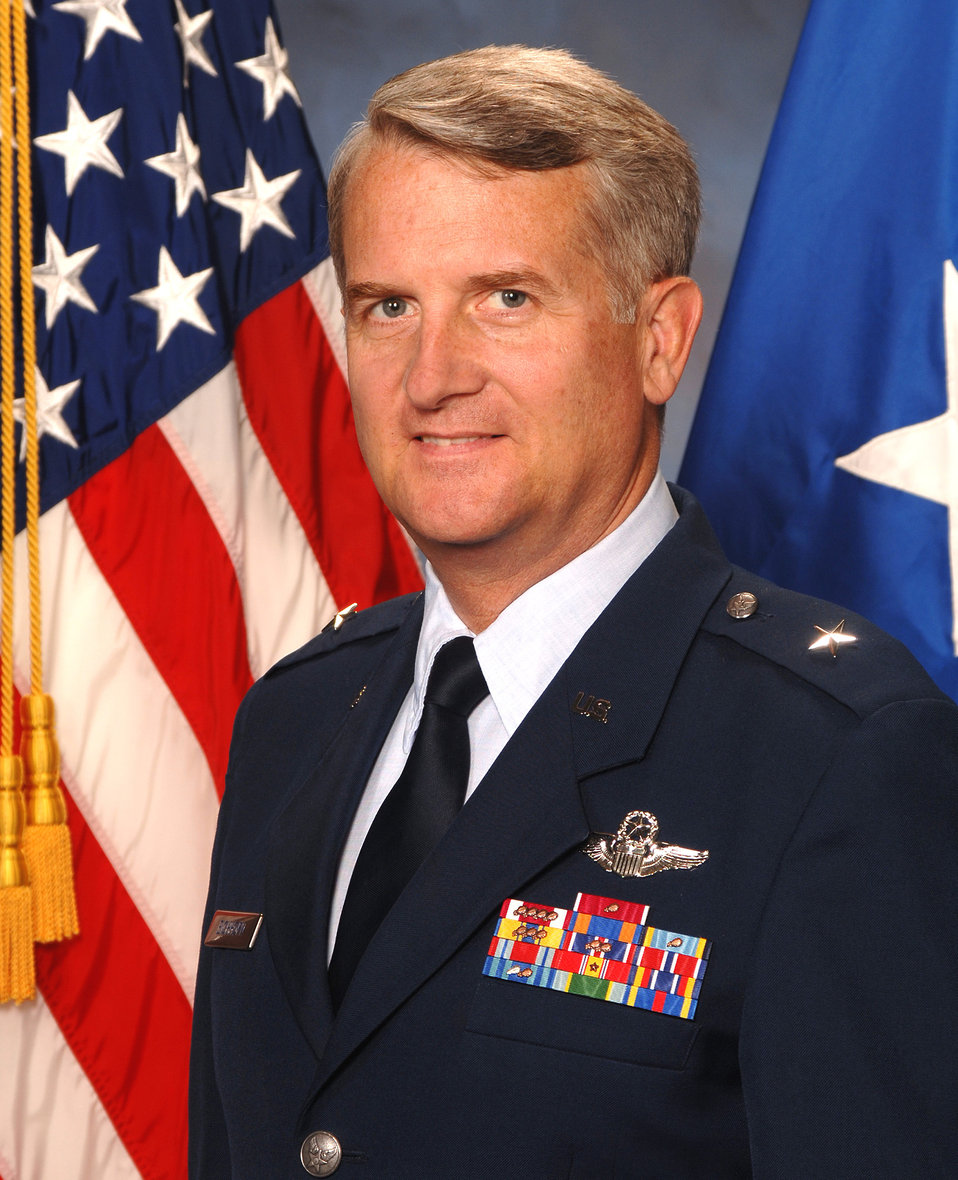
Brig. Gen. David J. Eichhorn, Air Force Flight Test Center commander.